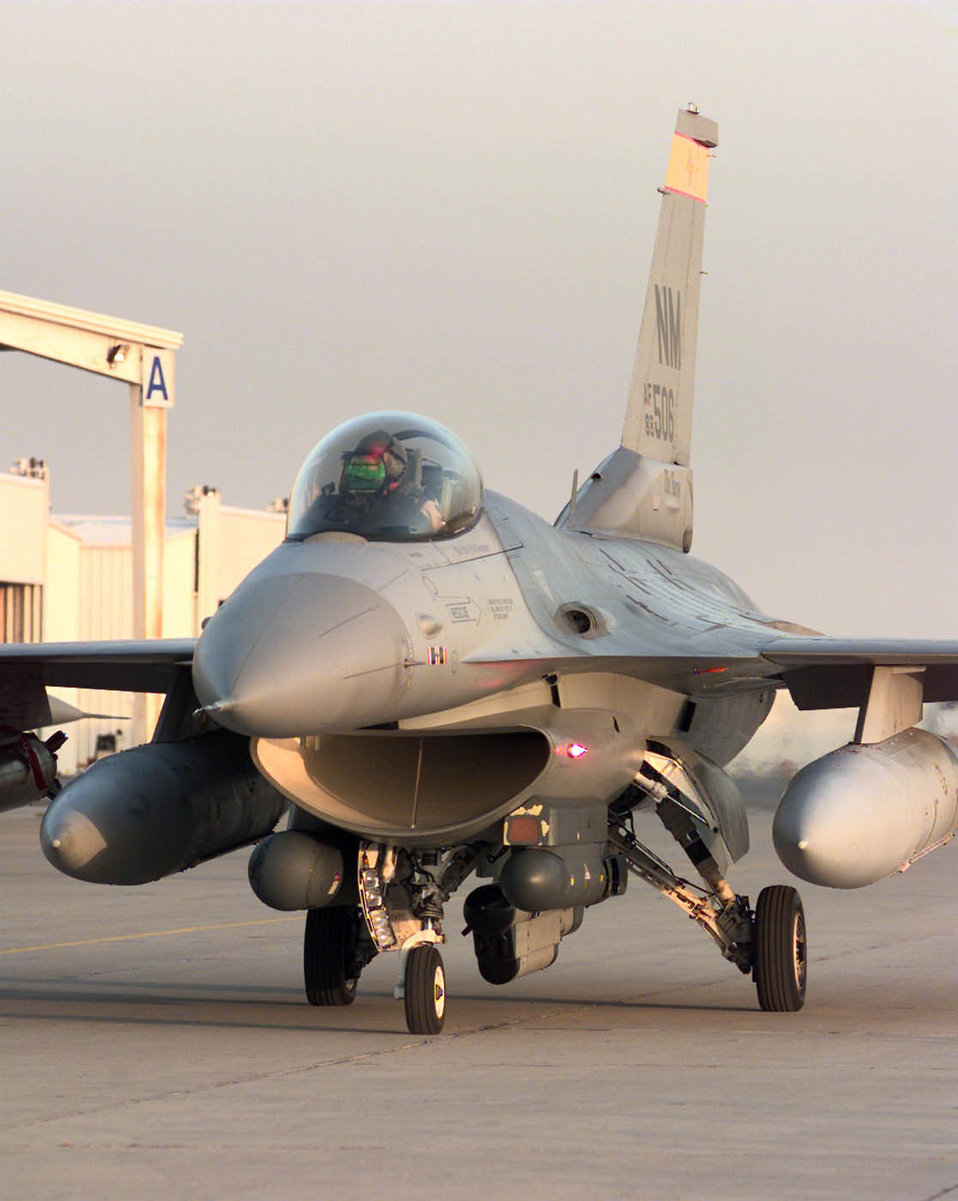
New Mexico Falcon

OPERATION SOUTHERN WATCH -- A New Mexico Air National Guard F-16C Fighting Falcon taxis out for an Operation Southern Watch patrol mission. The 188th Fighter Squadon recently joined their active duty counterparts from the 523rd Fighter Squadron, 27th Fighter Wing, to support air operations over the No-Fly, No-Drive Zone in Southern Iraq.